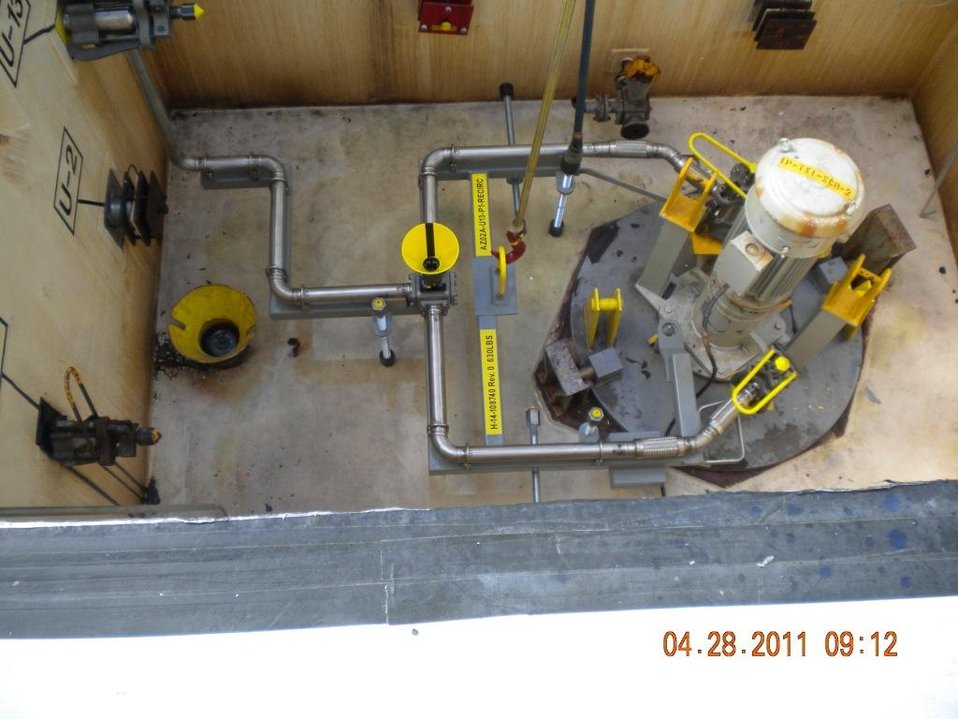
Hanford ORP Recovery Act Projects

Recovery Act workers successfully installed a jumper, shown here. A jumper connects valves inside the tank farm valve pits, allowing operators to route waste between various transfer lines and tanks.